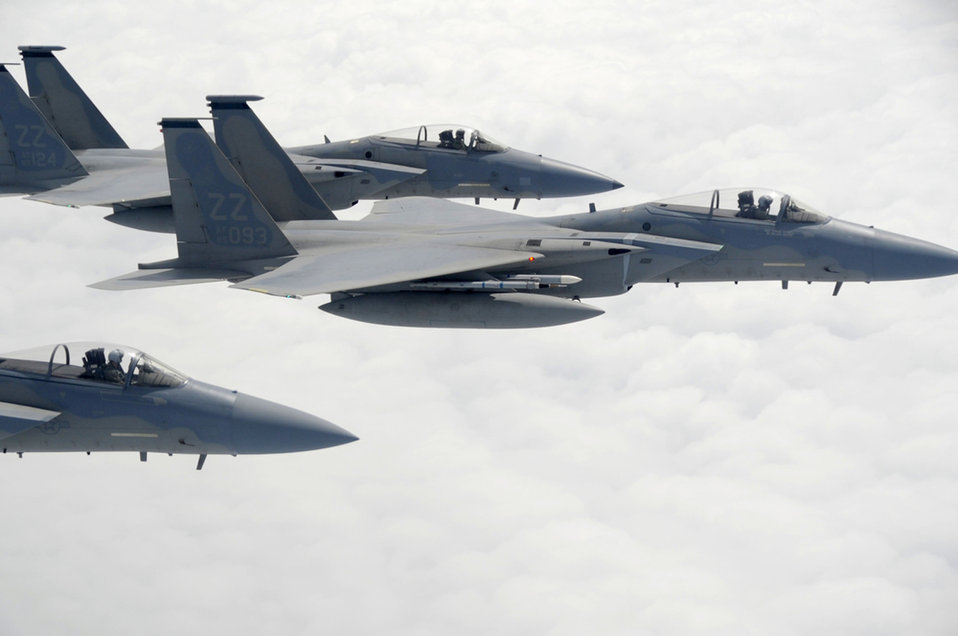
Cope Tiger 2011

F-15 Eagles assigned to the 44th Expeditionary Fighter Squadron at Kadena Air Base, Japan, fly over Thailand March 23, 2011, prior to starting an exercise scenario during Cope Tiger 2011, which runs from March 14 through 25. Participants of Cope Tiger include the U.S. Air Force, the U.S. Marine Corps, the Royal Thai Air Force, Royal Thai Army, and the Republic of Singapore Air Force.